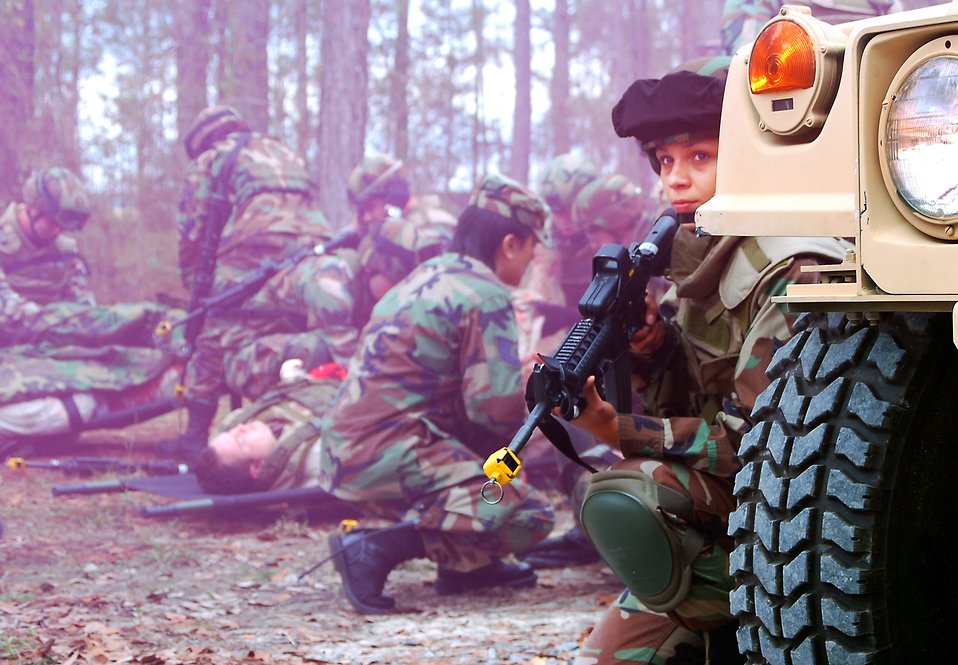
Combat skills

Airman 1st Class Nadine Rudke guards the perimeter of a casualty collection point during a combat medical skills exercise Jan. 19 at Moody Air Force Base, Ga. Airman Rudke is an 823rd Security Forces Squadron fire team member.